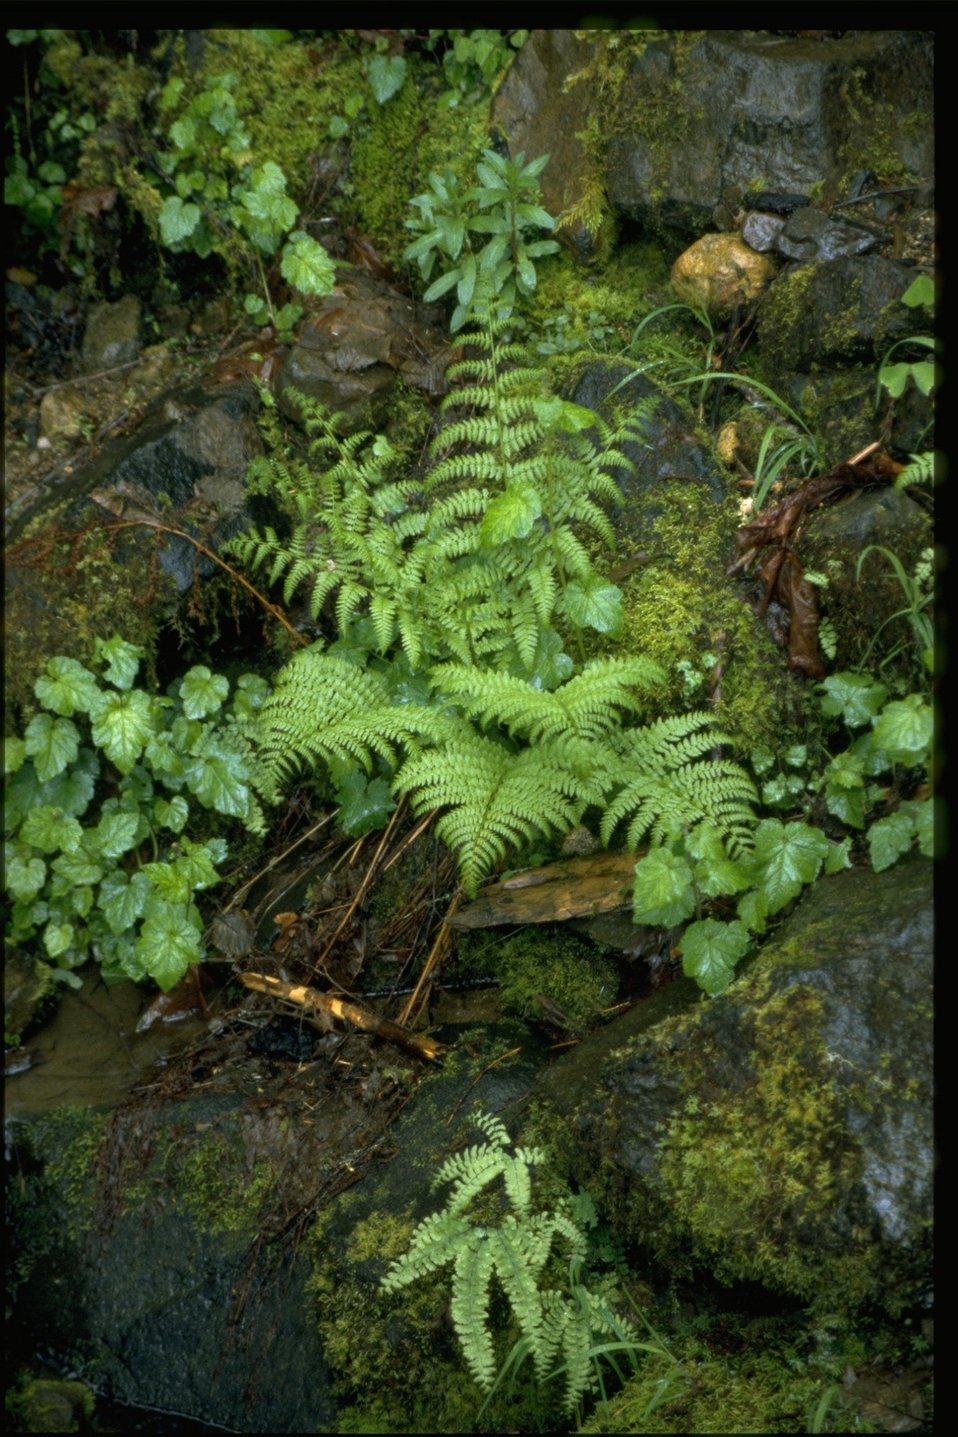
Medium shot of northern lady fern (Anthyrium felix-femina).